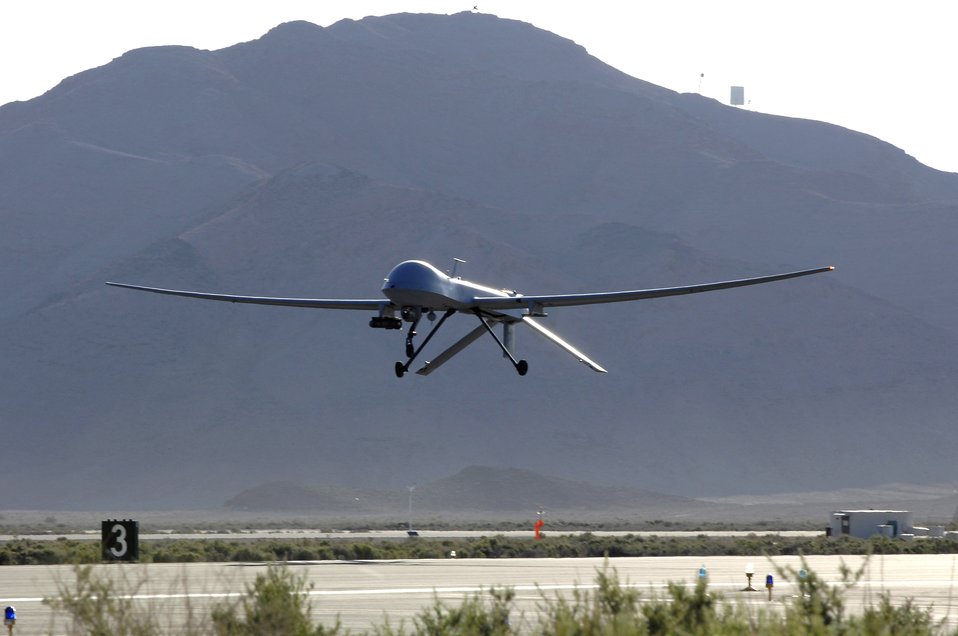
A Predator on the prowl

An MQ-1 Predator unmanned aerial vehicle takes off from Creech Air Force Base, Nev., May 11, for a training sortie over the Nevada desert.